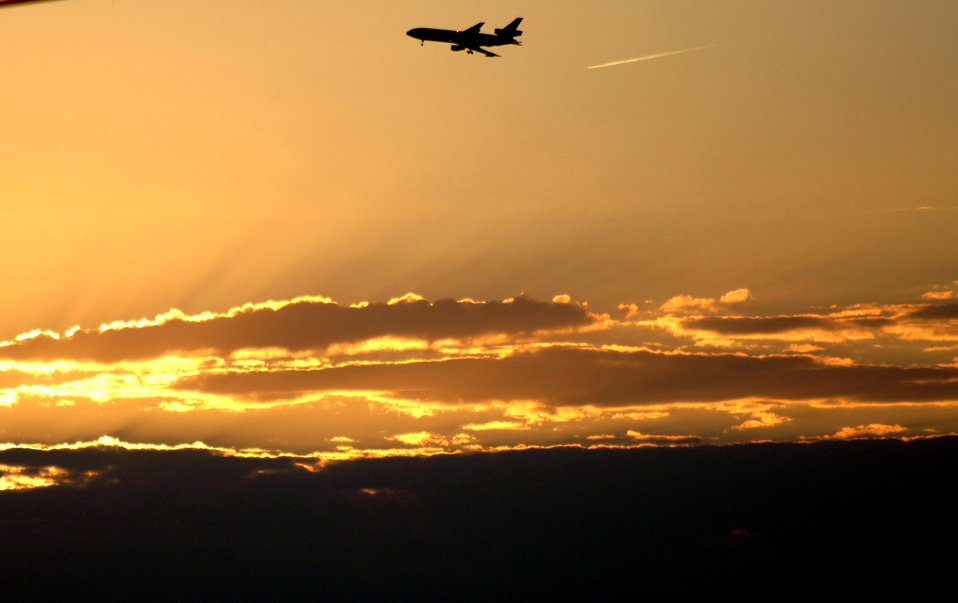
At the end of a long day

A KC-10 Extender refueling aircraft from the 305th Air Mobility Wing at McGuire Air Force Base, N.J., flies over the base on its way back from a mission Oct. 3. The KC-10 is one of the Air Force's main refuelers.